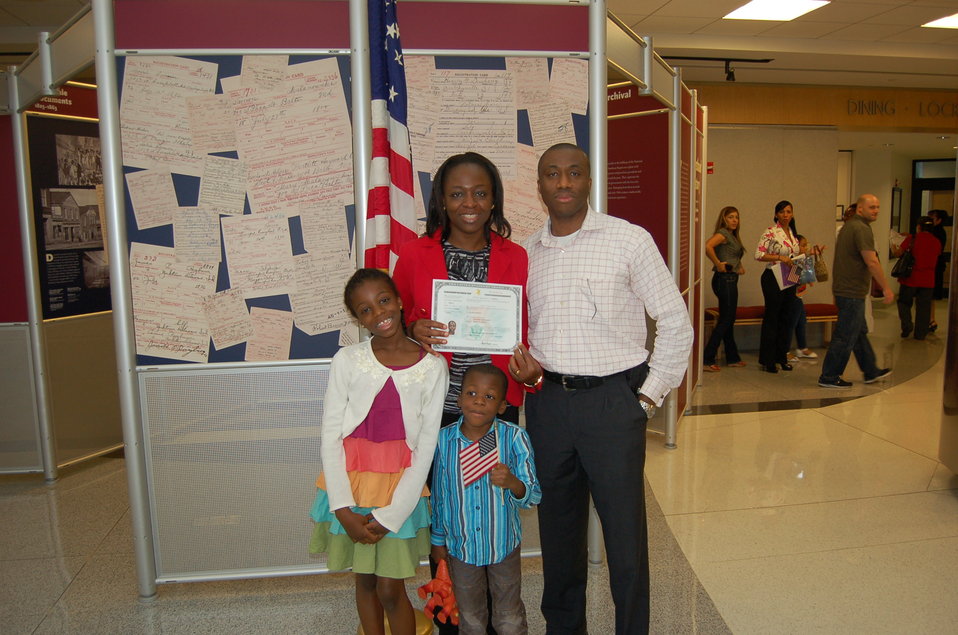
New Citizens